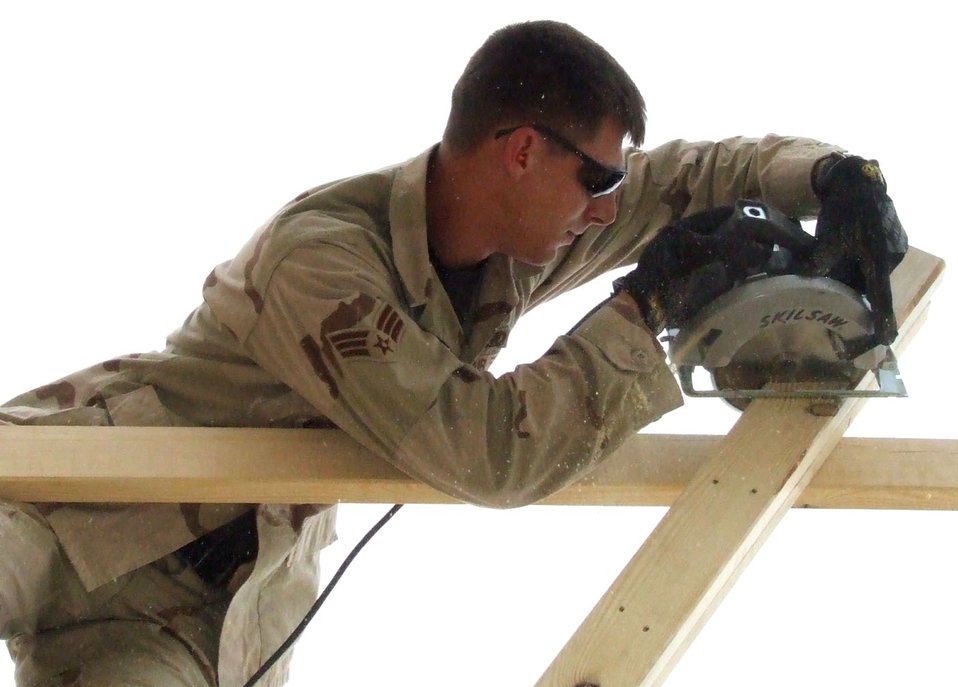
Prime BEEF on the menu at contingency base

Senior Airman Jason Schwager builds a staircase at Contingency Operating Base Speicher, Iraq. Airman Schwager, assigned to Detachment 10 of the 732nd Expeditionary Civil Engineer Squadron, is deployed to Speicher from Ellsworth Air Force Base, S.D.